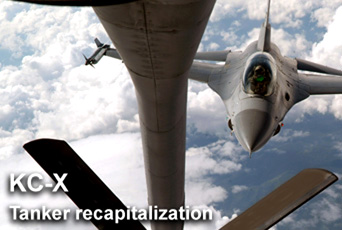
Tanker recapitalization proposal released

A request for proposal for a replacement tanker aircraft was released by Air Force leaders Jan. 30. The Air Force's No. 1 acquisition priority is a replacement for the KC-135.